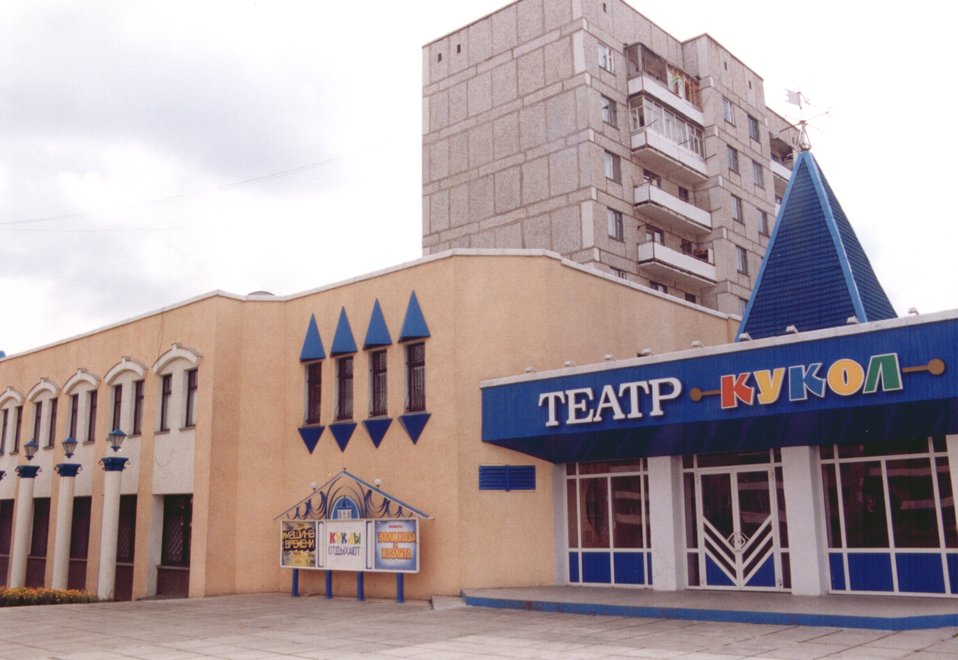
Театр кукол города Краснотурьинска (Свердловская облать, Россия)